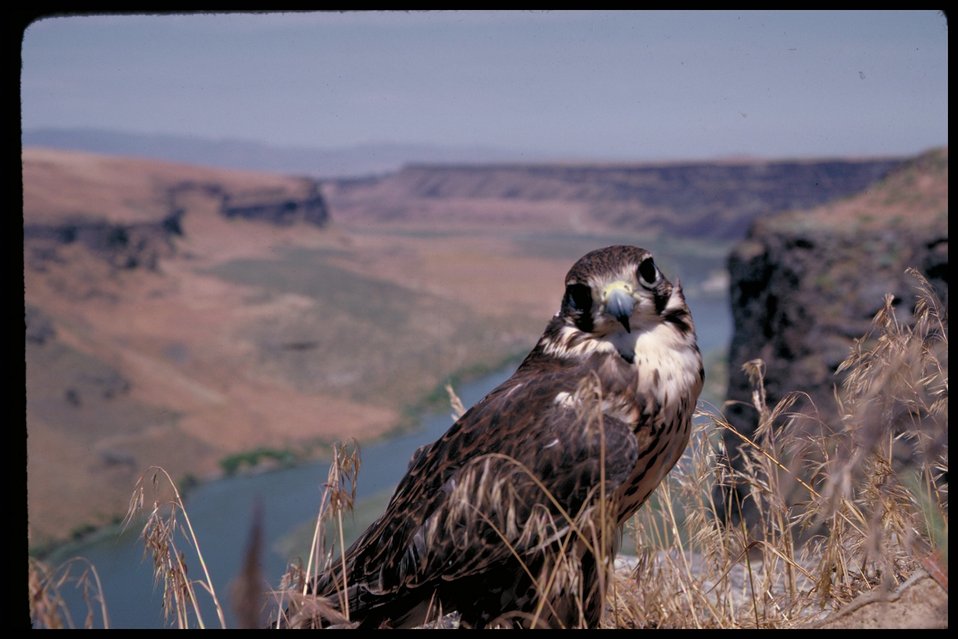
Prarie Falcon Birds of Prey National Conservation Area BOP Owyhee Field Office LSRD Lower Snake River District